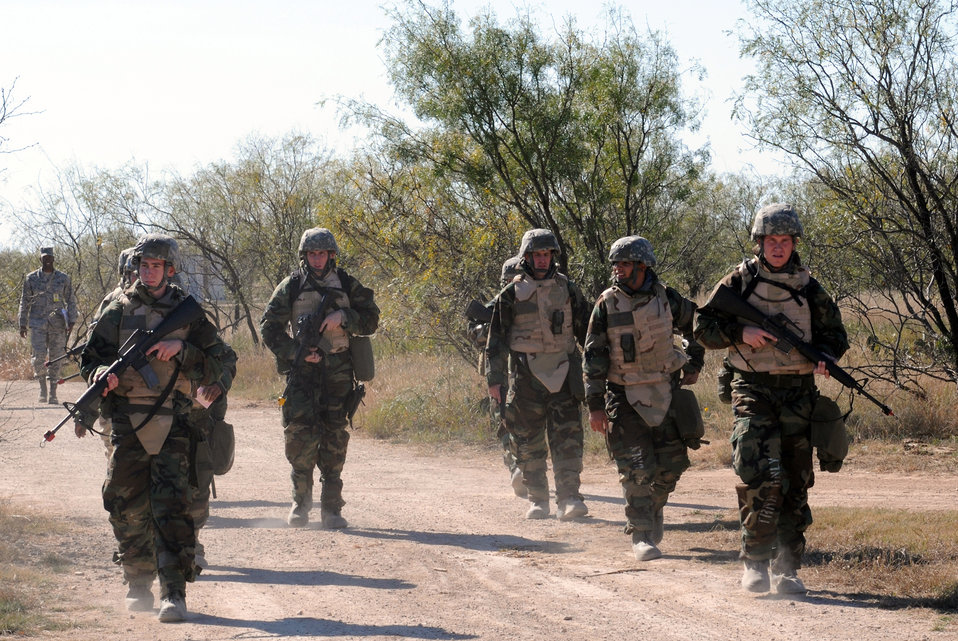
Ready for the real world

Clad in chemical protective gear, a reconnaissance patrol returns to Forward Operating Base Sentinel during a field training exercise, Nov. 19, 2009, at Goodfellow Air Force Base, Texas. FOB Sentinel is used to simulate real world conditions and scenarios.